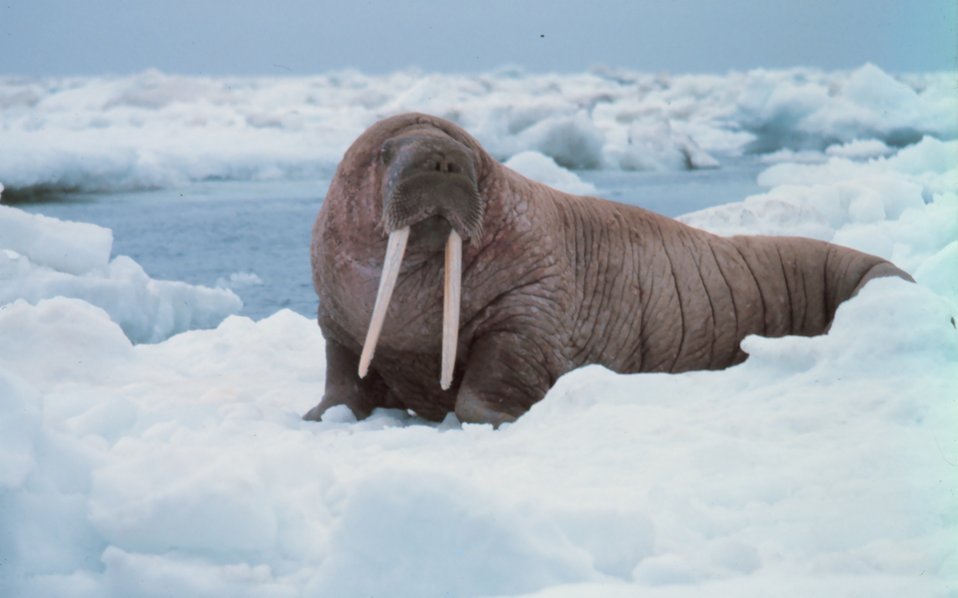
Large walrus on the ice - Odobenus rosmarus divergens - contemplating the photographer.